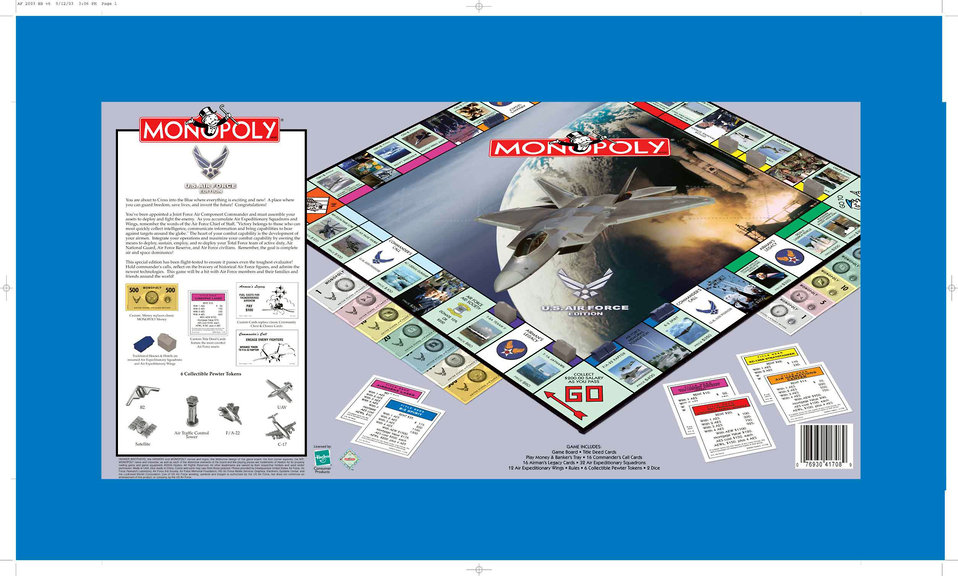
Air Force Edition Monopoly coming soon

WASHINGTON -- Air Force Edition Monopoly will be available at base exchanges beginning Dec. 1. Instead of traditional houses and hotels, the Air Force edition features air expeditionary squadrons and air expeditionary wings. Players navigate the board with a B-2 Spirit, an air traffic control tower, the F/A-22 Raptor, a satellite, an unmanned aerial vehicle or a C-17 Globemaster III.